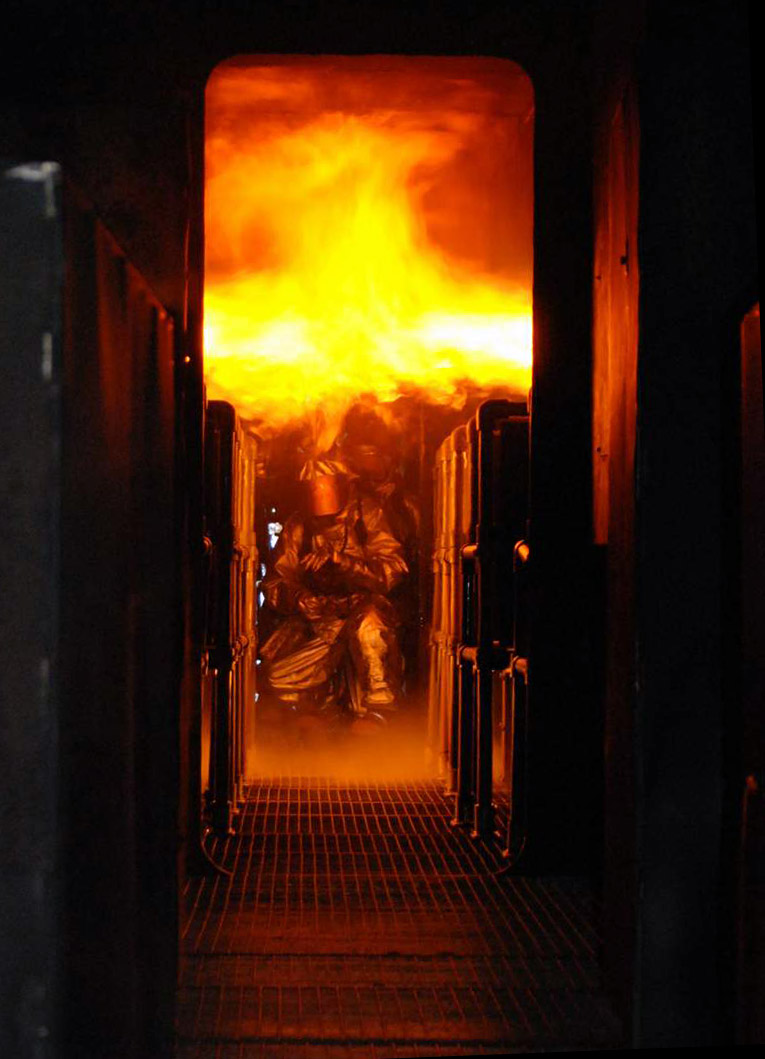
Dutch, U.S. air forces unite for training

Senior Airman Bradley Fear leads the charge against a fuselage engulfed in flames at the Woensdrecht Firefighting Training Facility in the Netherlands. Airman Fear and other members of the 309th Airlift Squadron from Chievres Air Base, Belgium, trained on the simulator.